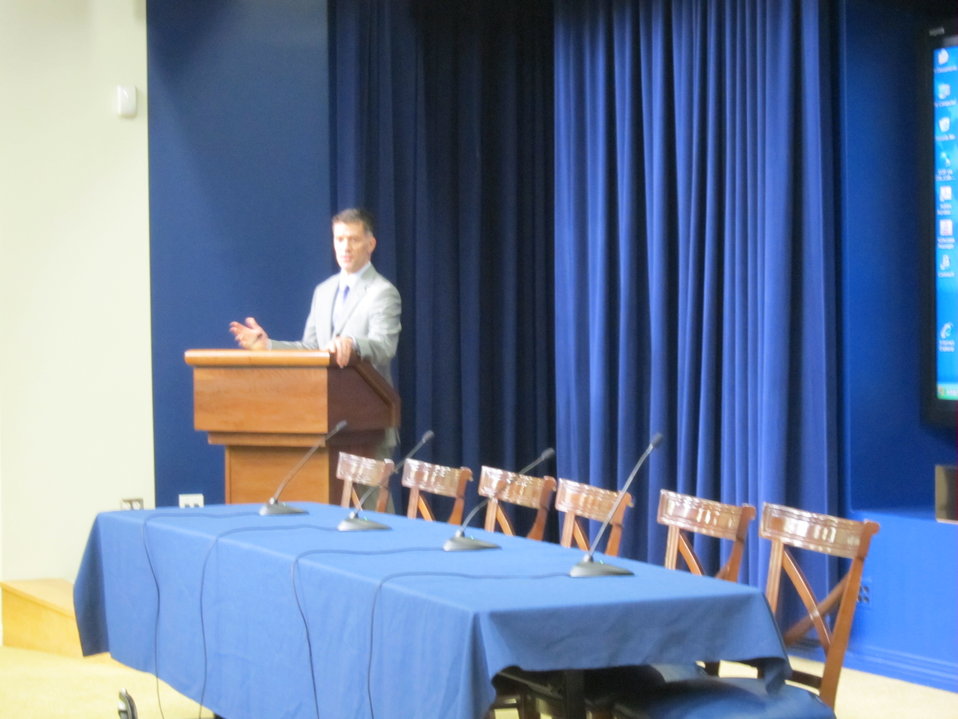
WH 2012 World Hepatitis Day Event